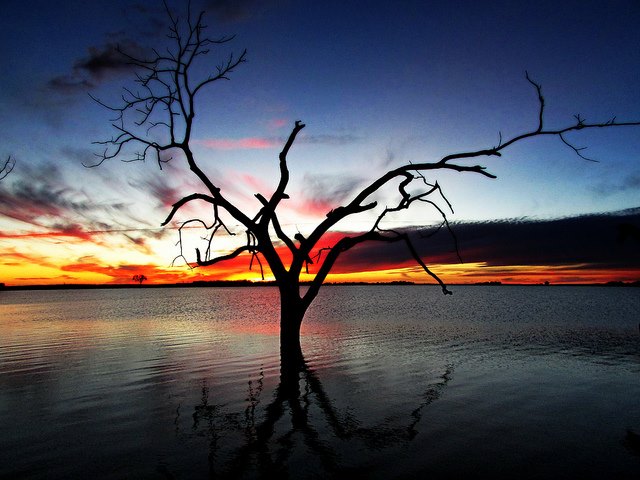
Waubay NWR Sunset

Sunset sets the sky ablaze at South Dakota's Waubay National Wildlife Refuge.